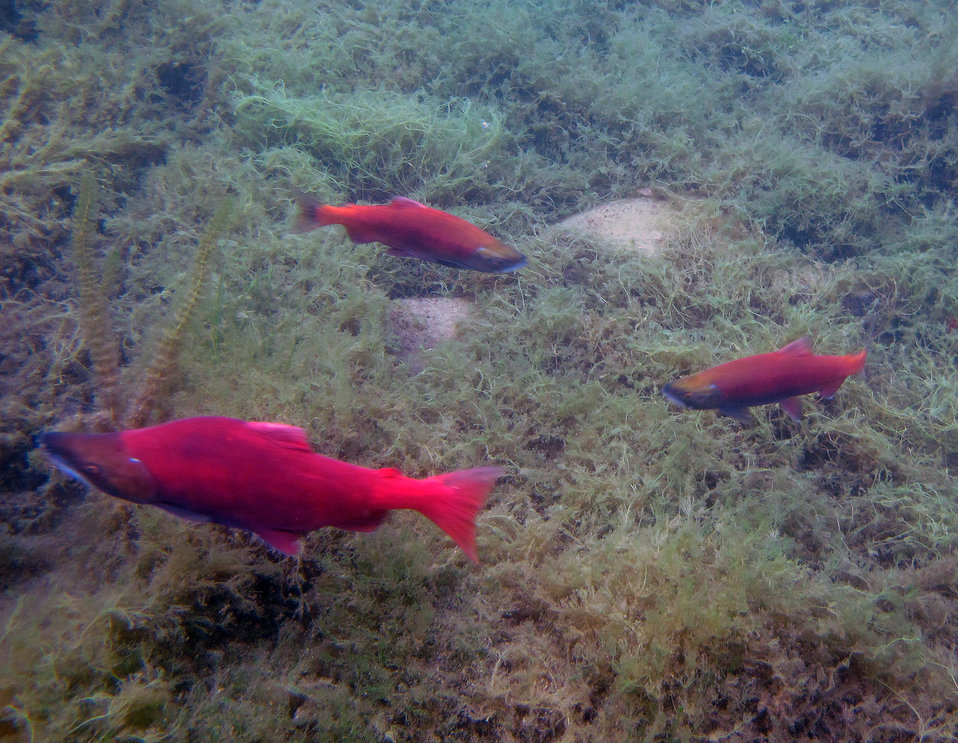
Sockeye life history variation in Hidden Lake